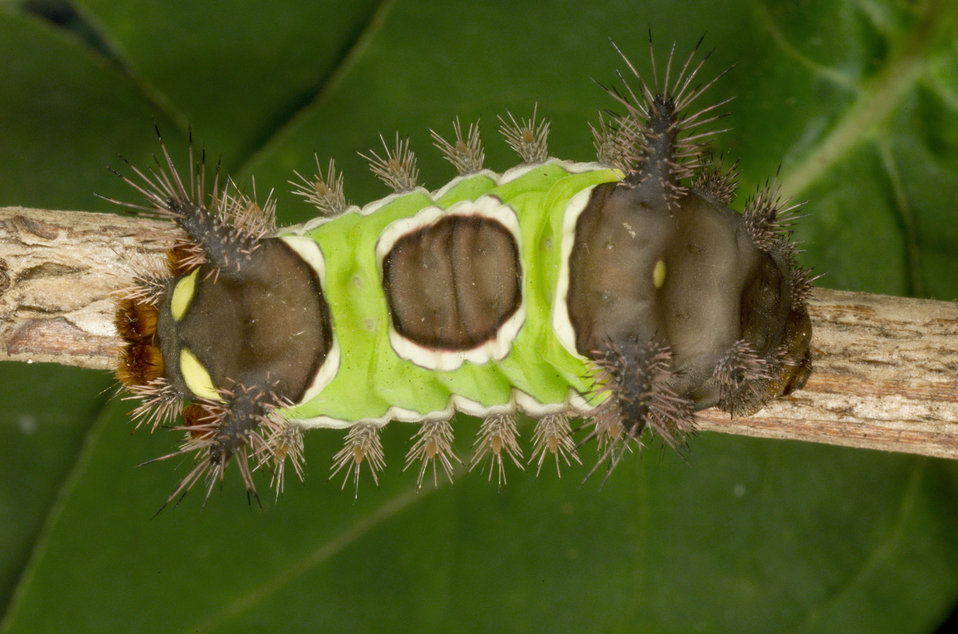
This 2001 photograph depicted a superior, or view from above, of a poisonous saddleback caterpillar, which is actually the 'instar', or developmental stage through which the saddleback caterpillar moth, Sibine stimulea passes on its way to becoming an adult, or 'imago', moth.